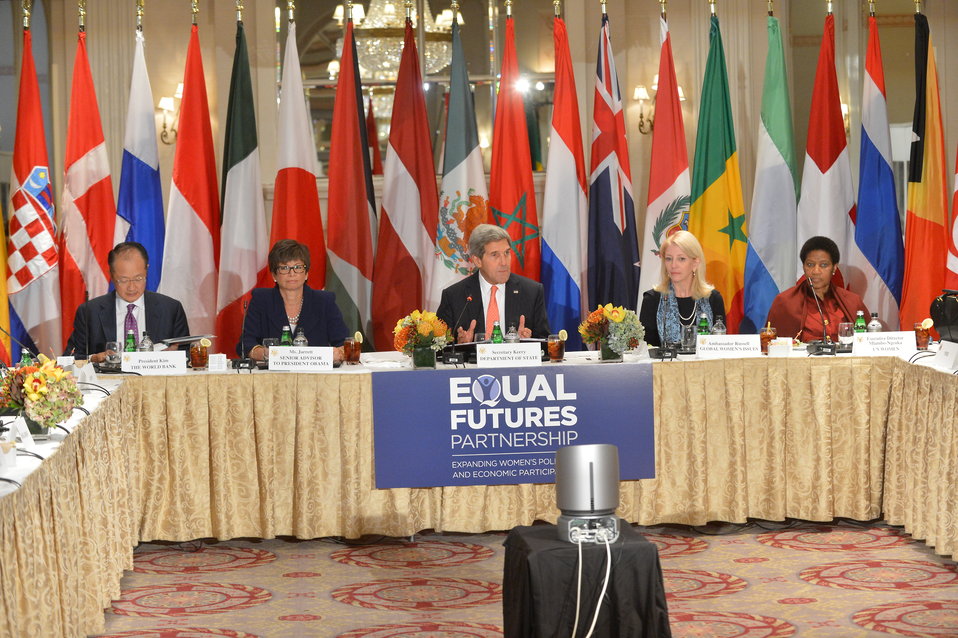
Secretary Kerry Participates in a Meeting of the Equal Futures Partnership

U.S. Secretary of State John Kerry participates in a meeting of the Equal Futures Partnership in New York City on September 23, 2013.